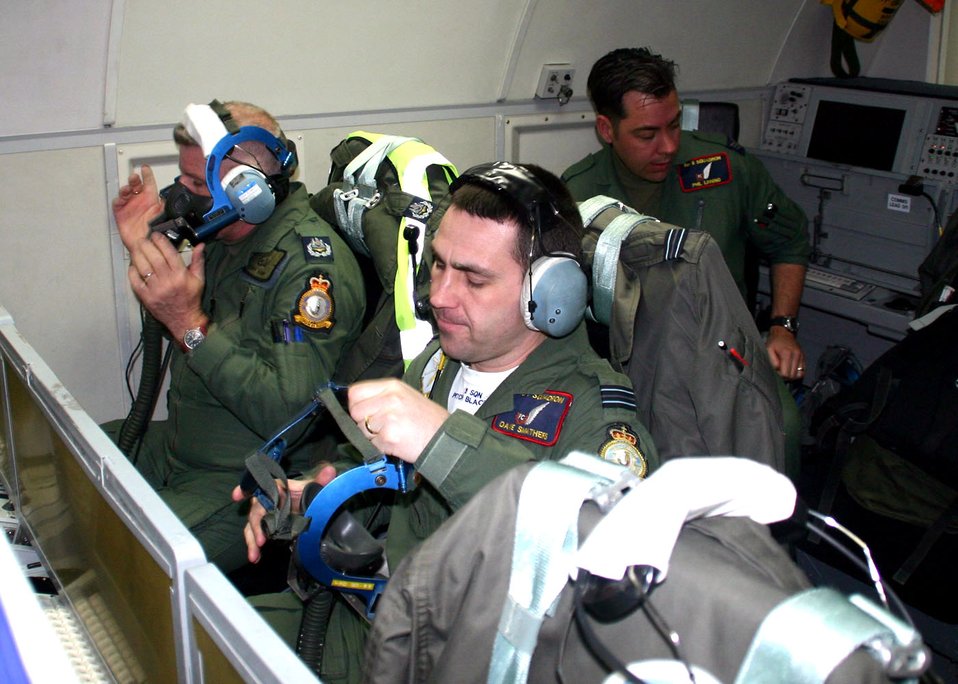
Preflight checks

No. 8 Squadron members from Royal Air Force Waddington, United Kingdom, Master Aircrew Tony Farmer, left, and Flight Lt. Dave Smathers, right, perform their preflight oxygen mask checks while Sergeant Phil Linning conducts preflight station checks before a mission. Members of the E-3D Sentry squadron conducted a liaison visit to the 552nd Air Control Wing to open the doors for future mission training and partnership.